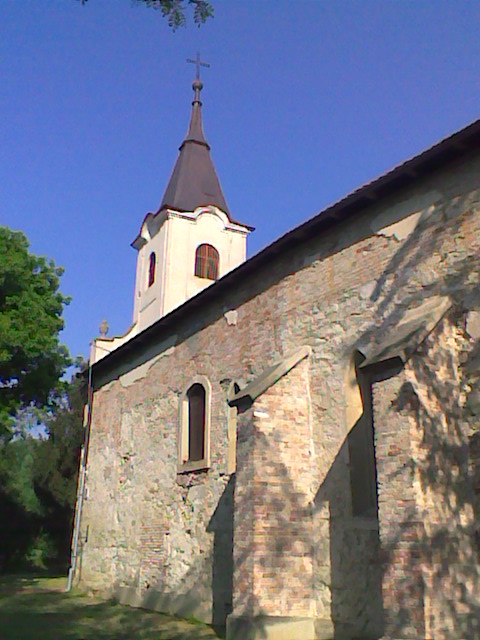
Magyar: A tiszasülyi Szent László-templom